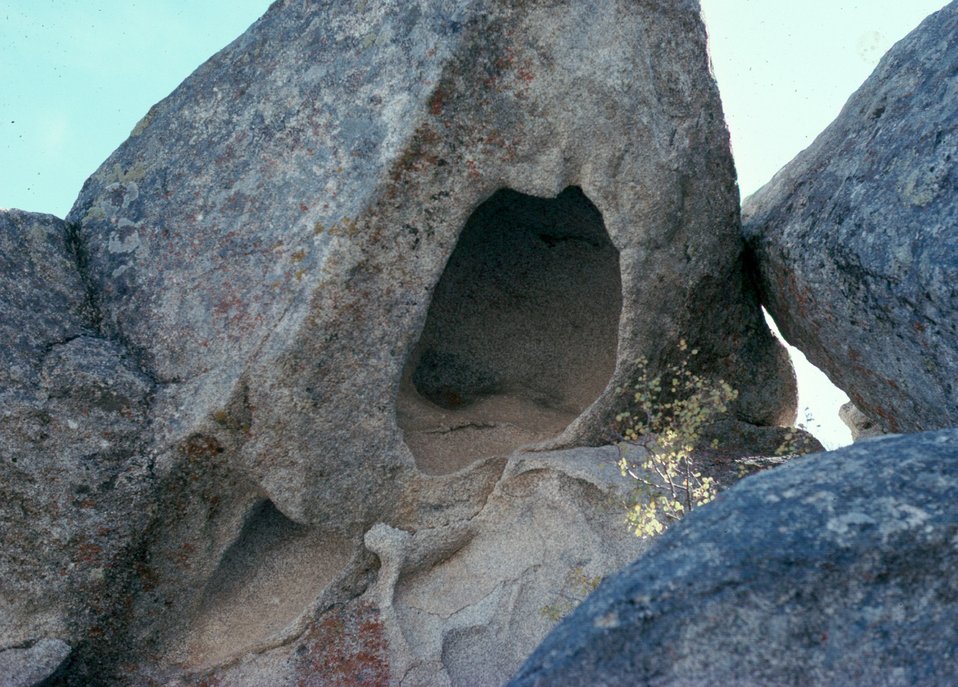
Silent City hollow formations Burley Field Office USRD Upper Snake River District